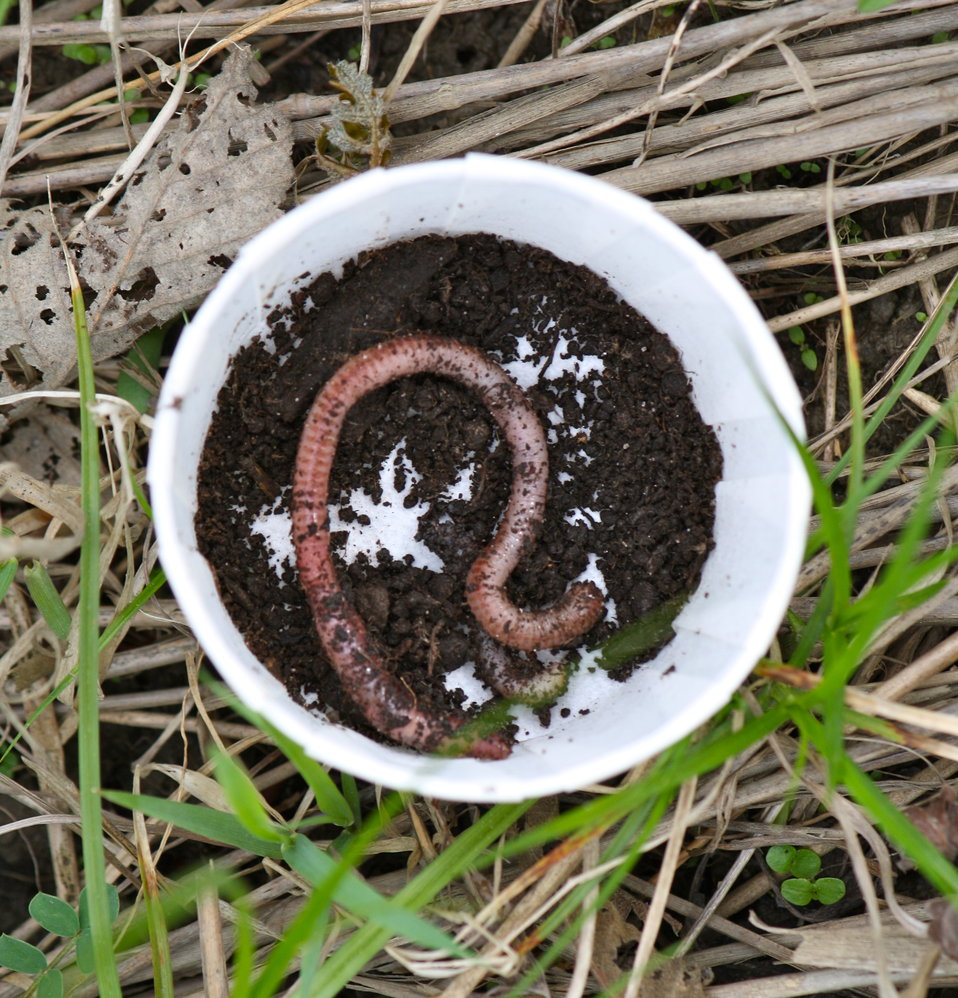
Bait

Fishing Derby held at the USFWS regional office in Hadley, MA on May 7, 2011.